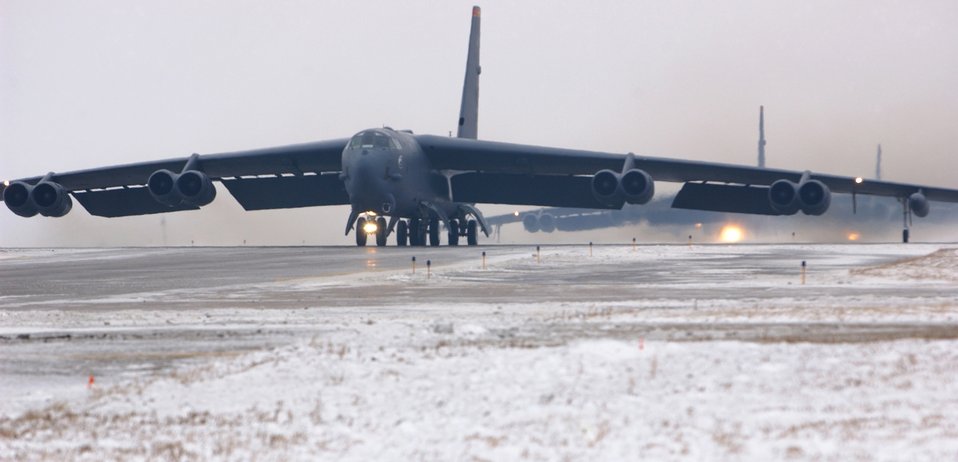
On alert

A B-52 Stratofortress taxis during an alert exercise at Minot Air Force Base, N.D., Monday, March 6, 2006. Alert generation exercises are held to ensure the base can respond rapidly to national objectives.